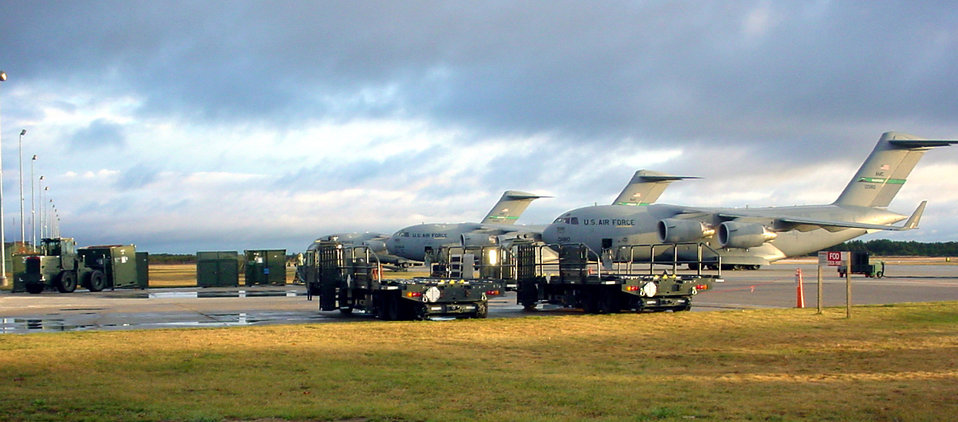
AMC exercise kicks off in Michigan

ALPENA, Mich. -- C-17 Globemaster IIIs from the 62nd Airlift Wing at McChord Air Force Base, Wash., are parked on the flightline here at the Combat Readiness Training Center flight operations area. The C-17s are at a Michigan Air National Guard base supporting exercise Crisis Look 2004.